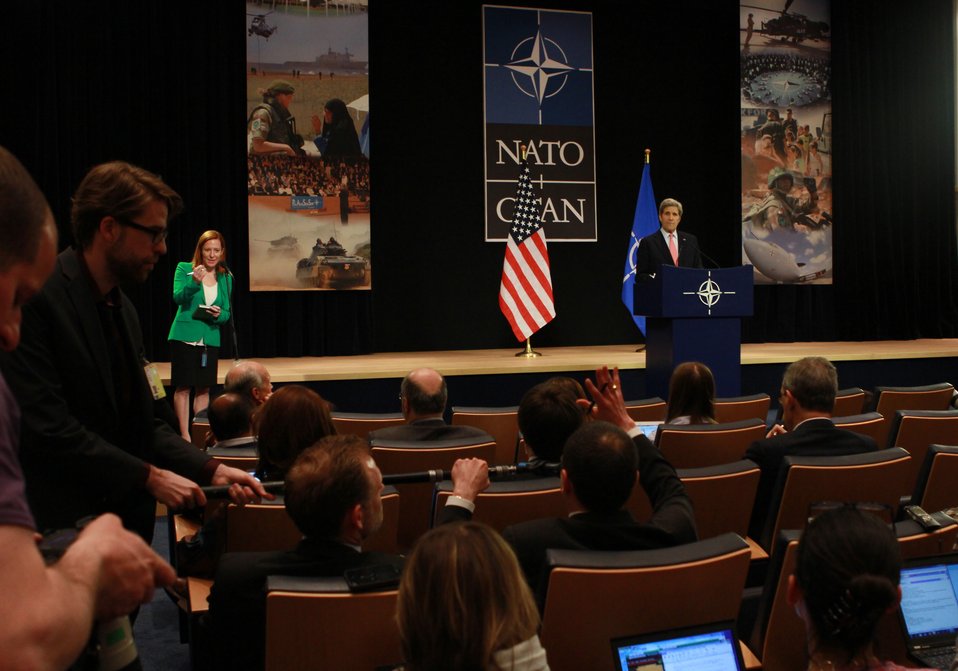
Secretary Kerry Speaks with Press at NATO Foreign Ministerial

U.S. Secretary of State John Kerry takes a question from a journalist at the NATO Foreign Ministerial in Brussels, Belgium, on April 23, 2013.